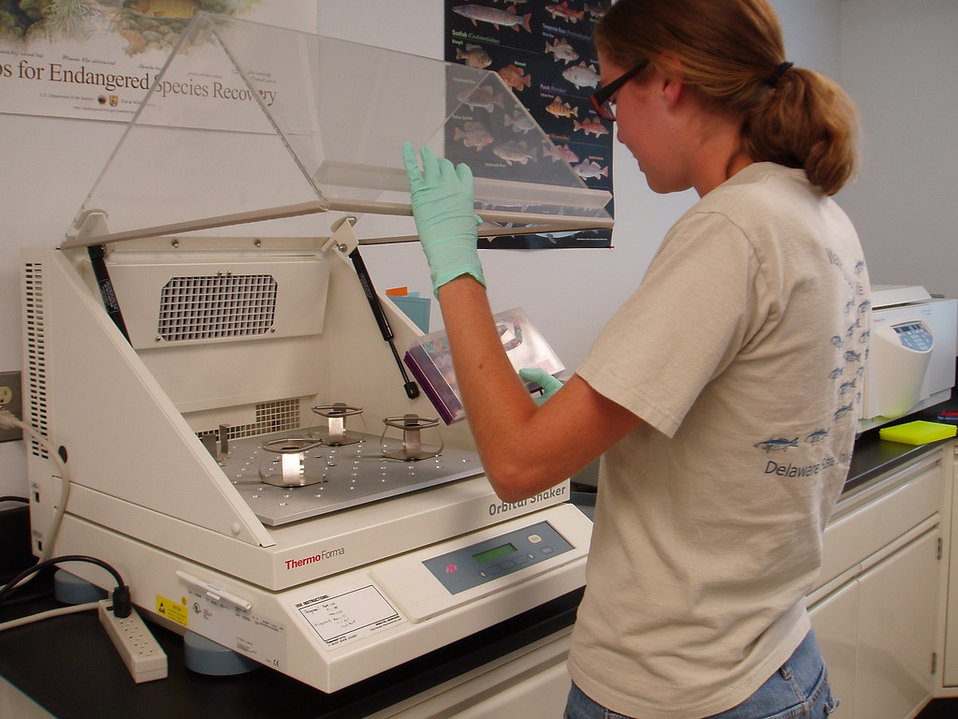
Working in the genetics lab

U.S. Fish and Wildlife Service